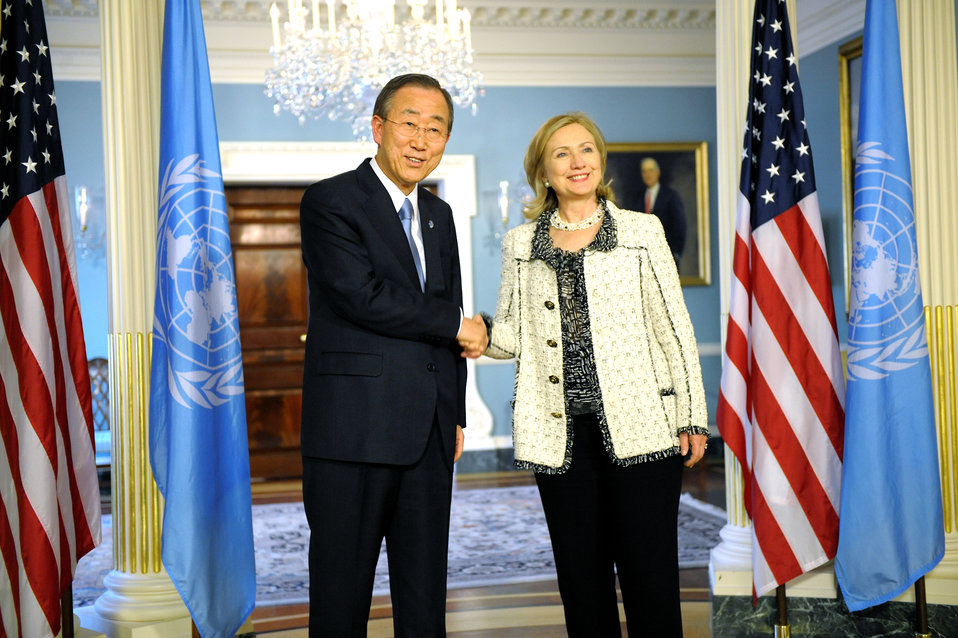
Secretary Clinton Meets With UN Secretary-General Ban Ki-Moon

U.S. Secretary of State Hillary Rodham Clinton holds a bilateral meeting with Secretary-General of the United Nations, Ban Ki-Moon, at the U.S. Department of State in Washington, D.C., on April 7, 2011.